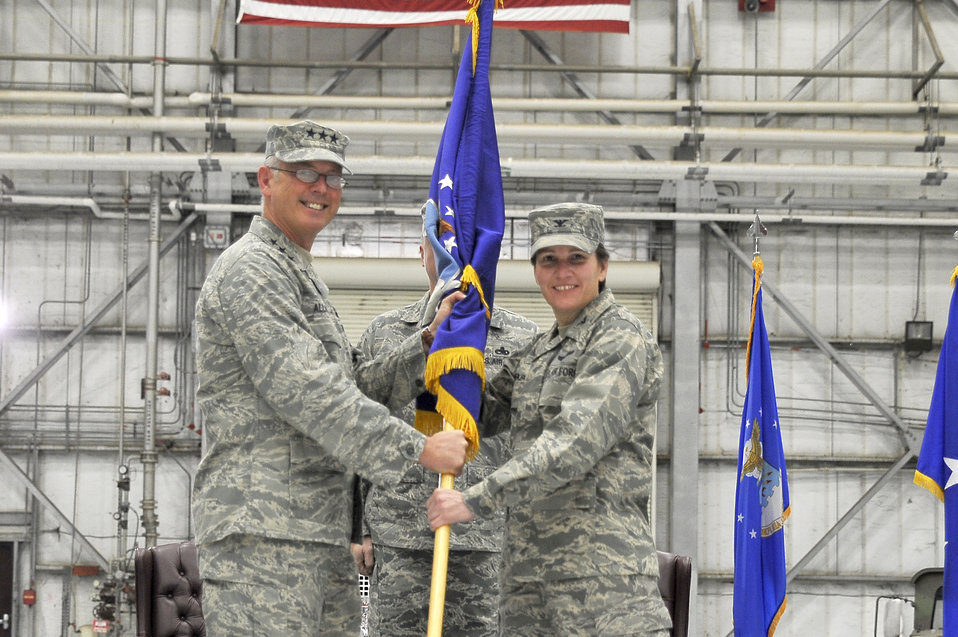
Joint basing takes pivotal step with activation of 628 ABW

Lt. Gen. Robert Allardice passes the guidon to Col. Martha Meeker during the 628th Air Base Wing activation and assumption-of-command ceremony Jan. 8 at Charleston Air Force Base, S.C.. The activation of the 628th ABW is the first step in fulfilling the 2005 Base Realignment and Closure decision that forms Joint Base Charleston. General Allardice is the 18th Air Force commander and Colonel Meeker is the 628th ABW commander.